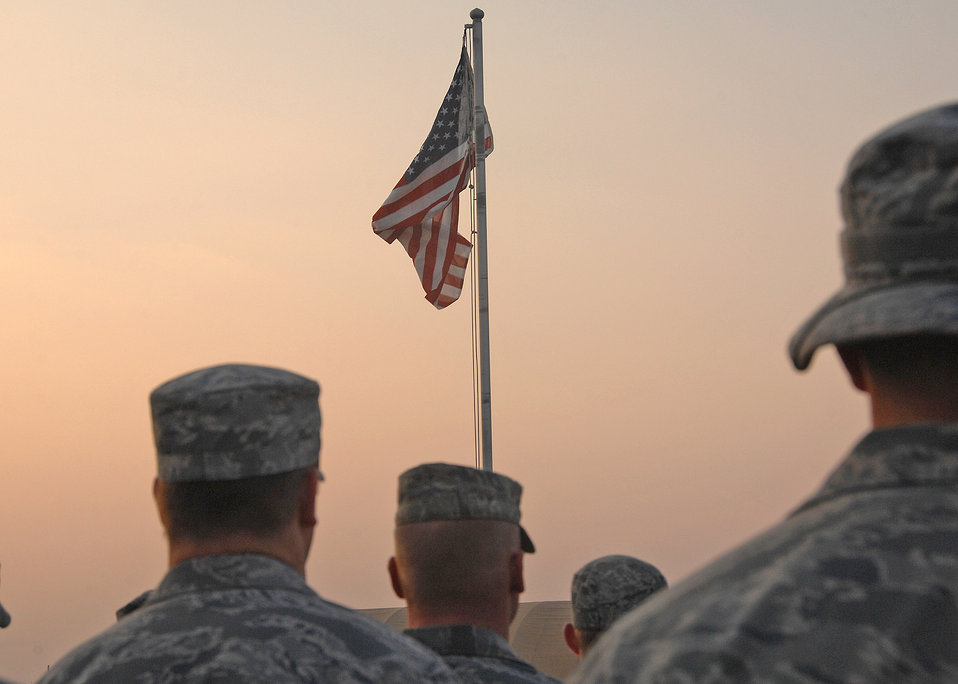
Remembering those who served

Members of the 387th Air Expeditionary Group stand in formation during the Veterans Day Reveille Ceremony Nov. 11 at an air base in Southwest Asia.